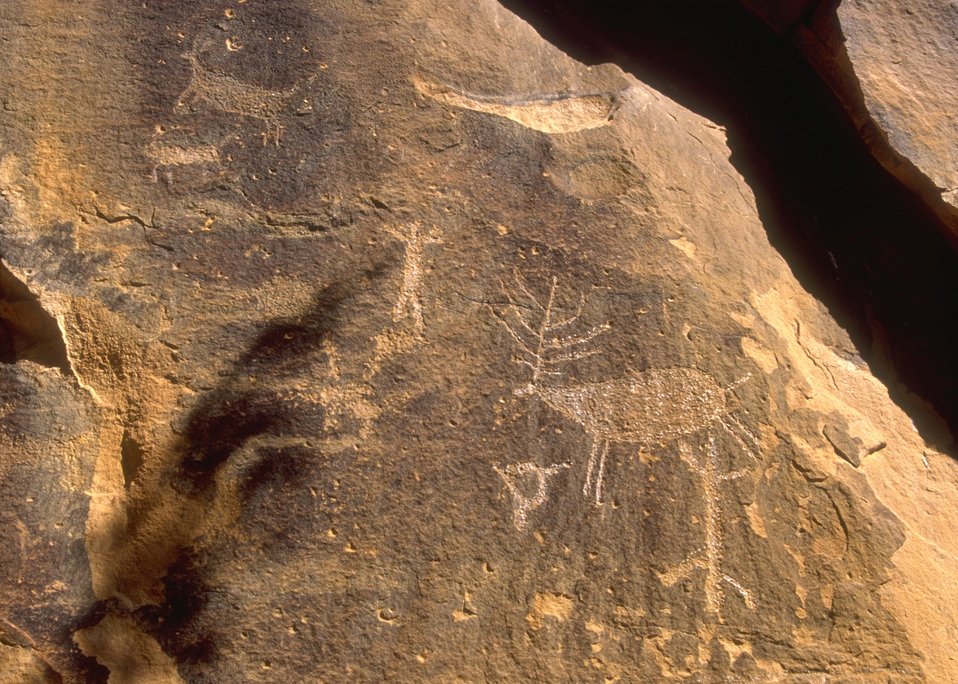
Petroglyph panel in Whoopup Canyon, Newcastle Field Office.